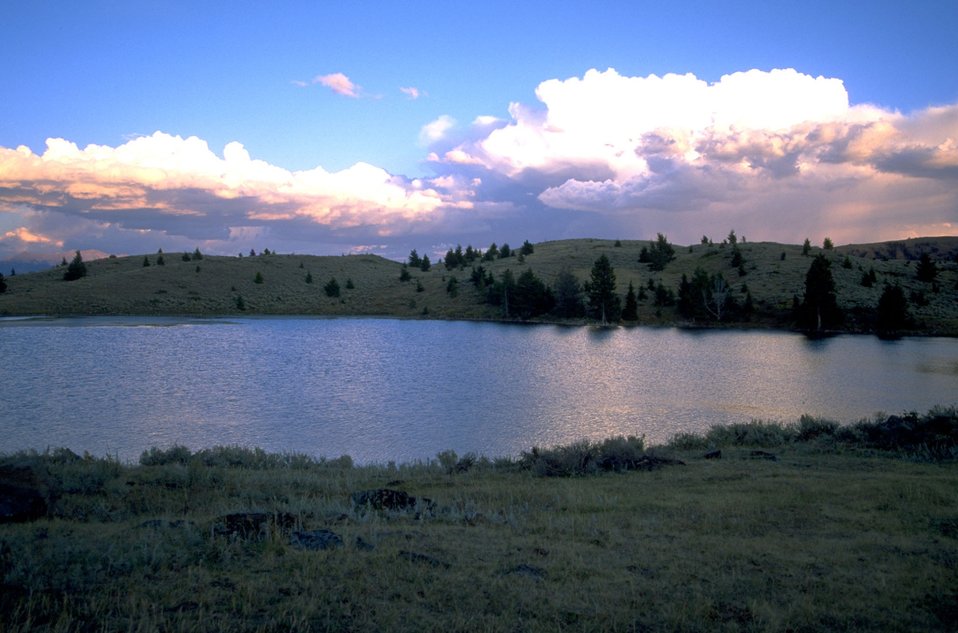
Clouds reflecting on a lake in the late evening sun